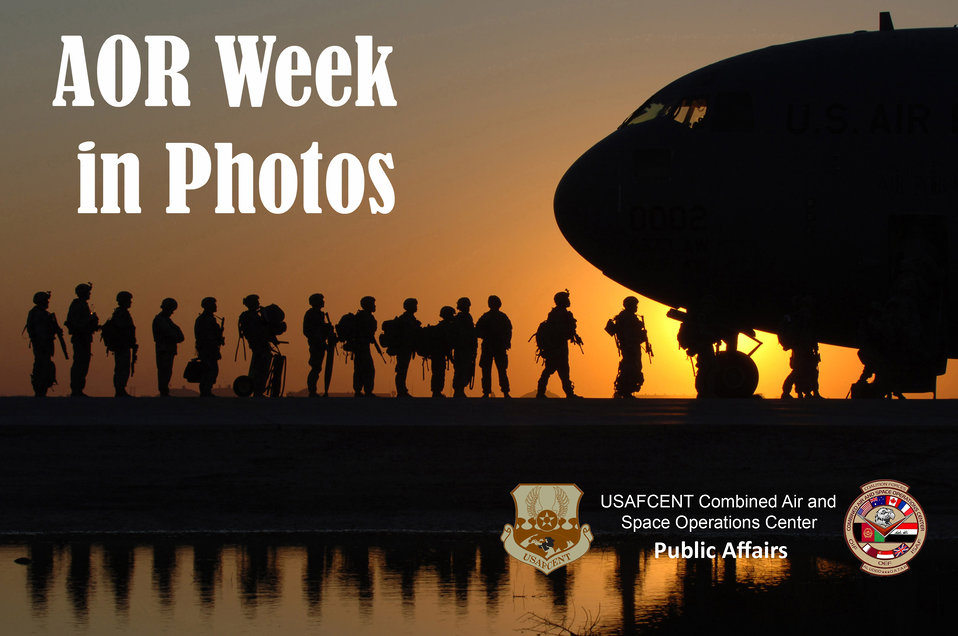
AOR Week in Photos

The U.S. Air Forces Central